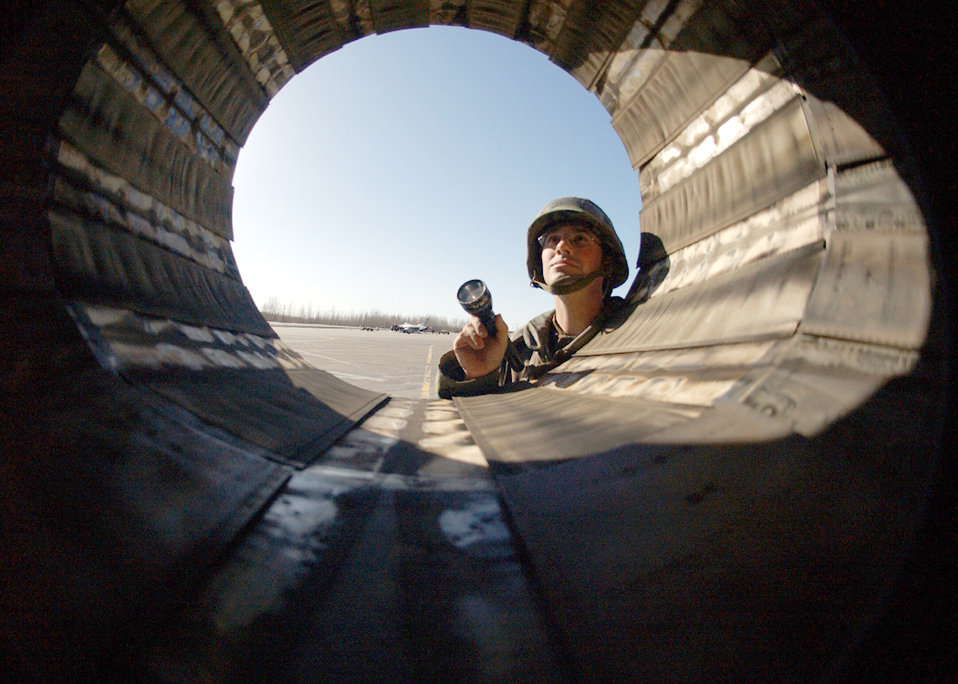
Exhaust look

EIELSON AIR FORCE BASE, Alaska -- A maintenance Airman checks the exhaust of an F-16 Fighting Falcon during the wing's operational readiness exercise here April 12. The Airman is a member of the 354th Maintenance Squadron, and the F-16 is assigned to the 18th Fighter Squadron.